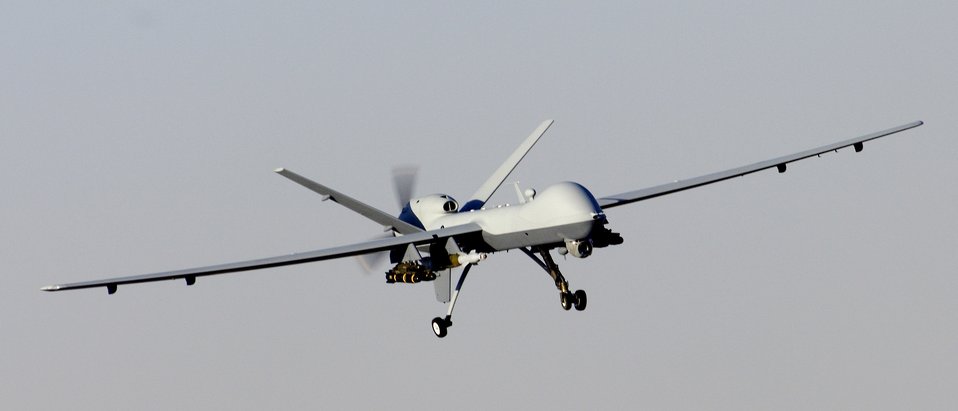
The Reaper returns

An MQ-9 Reaper unmanned aerial attack vehicle descends into an air field in Afghanistan Nov. 17 after a mission. The Reaper is able to carry both precision-guided bombs and missiles.